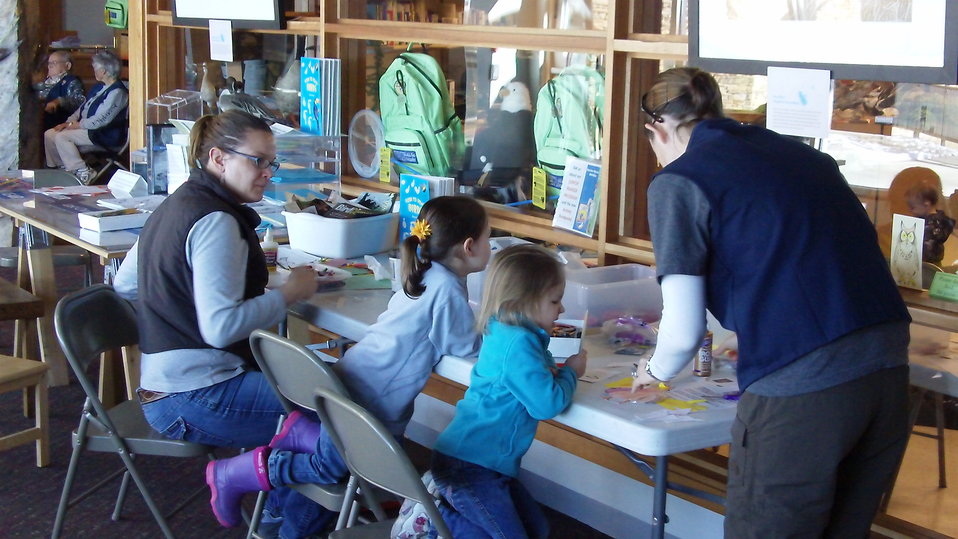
More Crafts

Zone officer Lisa Kennedy helps the kids and volunteers make crafts on the day after Thanksgiving, 2010 at Bear River Migratory Bird Refuge in Utah.